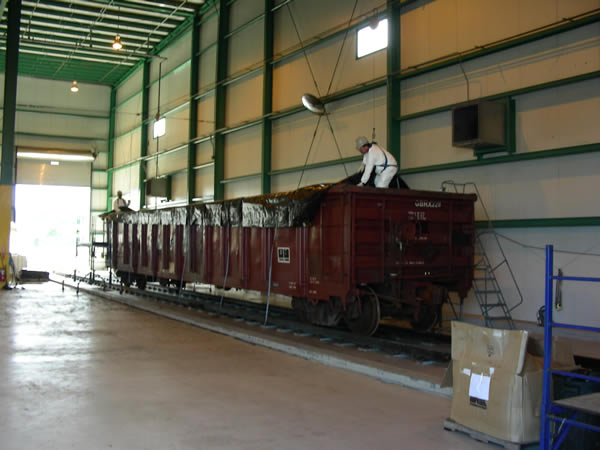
September 2009, Harnesses prevent workers from falling off rail cars

Workers inspect and wrap rail cars by hand to ensure the contaminated material is packed as tightly and securely as it can be.